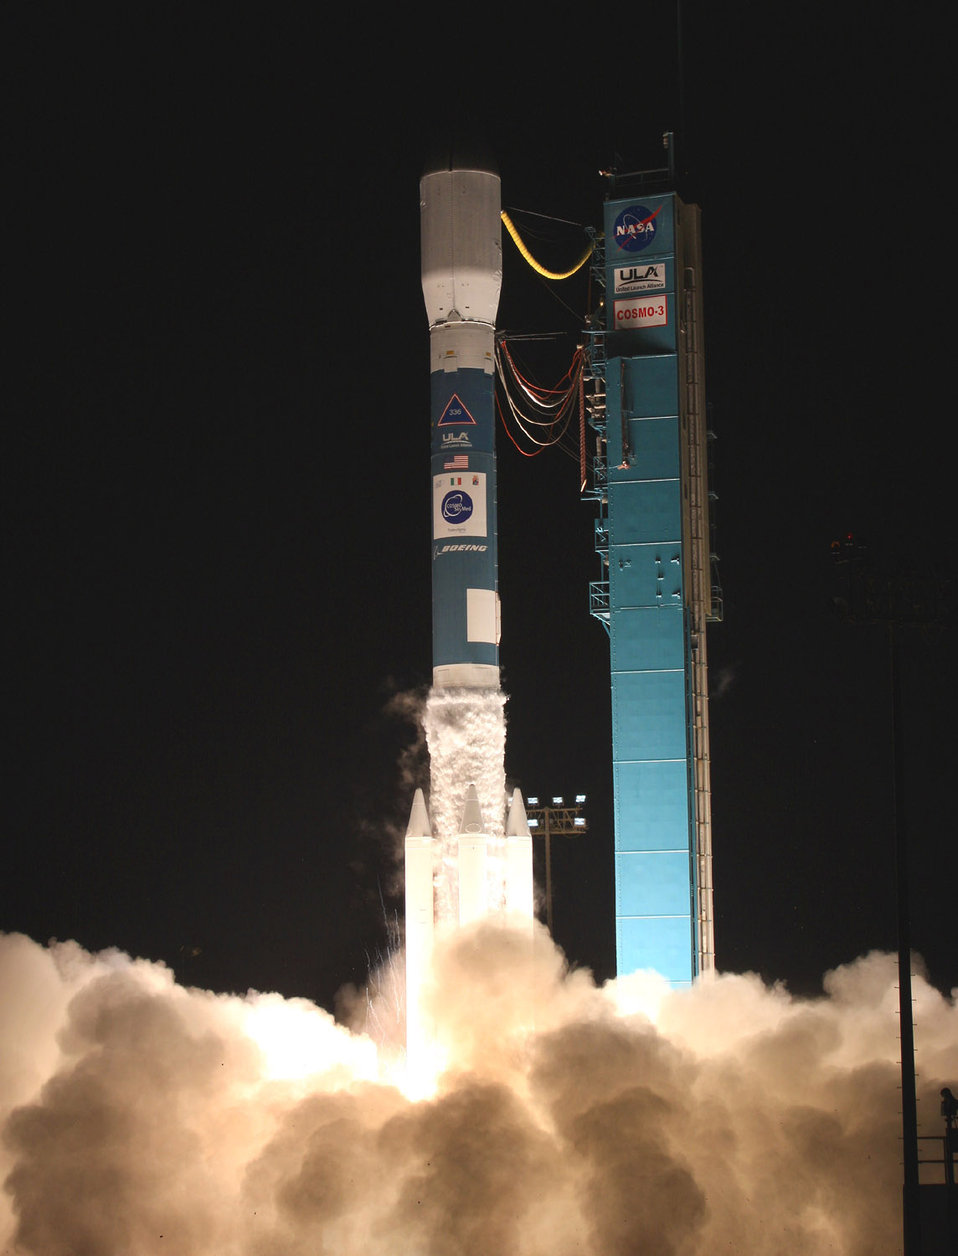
Vandenberg officials launch Delta II rocket

A Delta II rocket successfully launches at 7:28 p.m. Oct. 24 from the Space Launch Complex-2 at Vandenberg Air Force Base, Calif. The rocket took off carrying the Thales Alenia-Space COSMO-SkyMed 3 satellite.